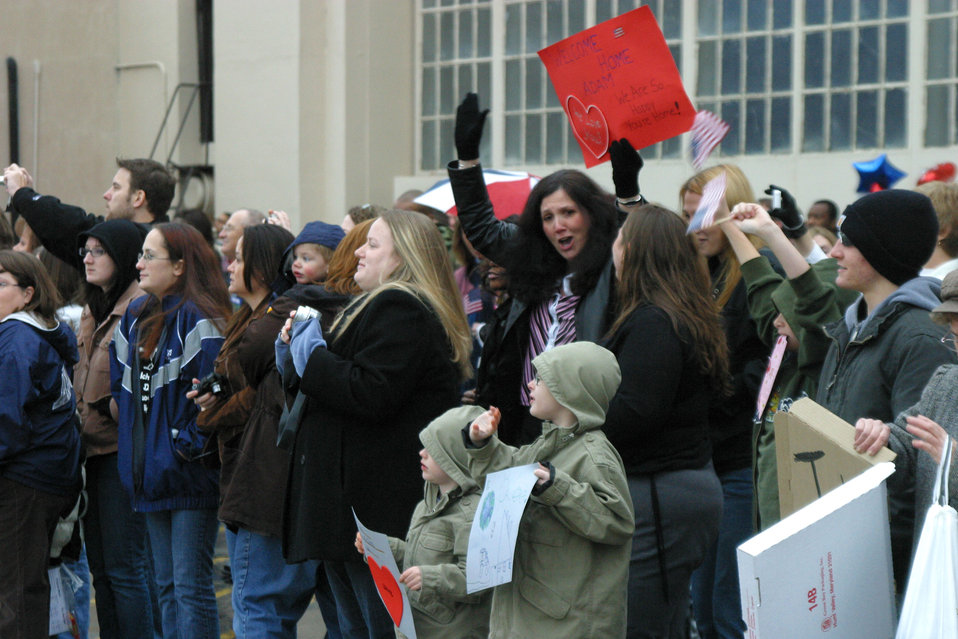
Pope homecoming

Family members of the 23rd Fighter Group wait for their Airmen to return from a four-month deployment to Afghanistan Jan. 21 at Pope Air Force Base, N.C.